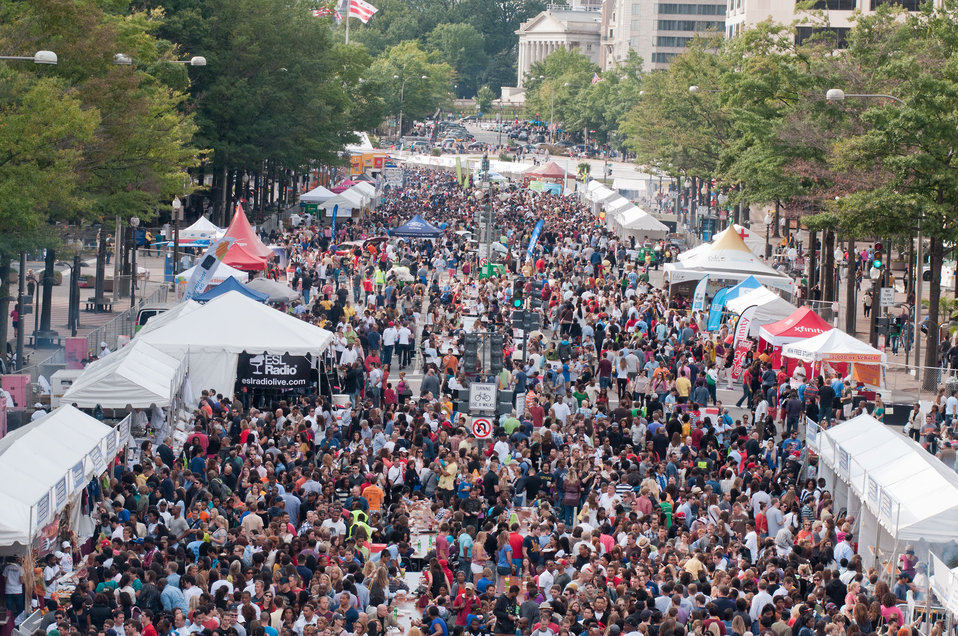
The Taste of D.C., event highlights more than 70 eateries, 30 specialty beer providers, the United Service Organization (USO) Metropolitan Washington, and live bands. It is anticipated that more than 500,000 people will attend over the course of the three-day event, which extends from the White House to the Capitol, along Pennsylvania Ave. in Washington D.C. on Saturday, October 6, 2012. Agriculture Food Safety and Inspection Service specialists present talks and cooking demonstrations. Agriculture’s mobile Discovery Zone is on hand to educate children and parents about the four main principals of food safety – clean, separate, cook and chill.